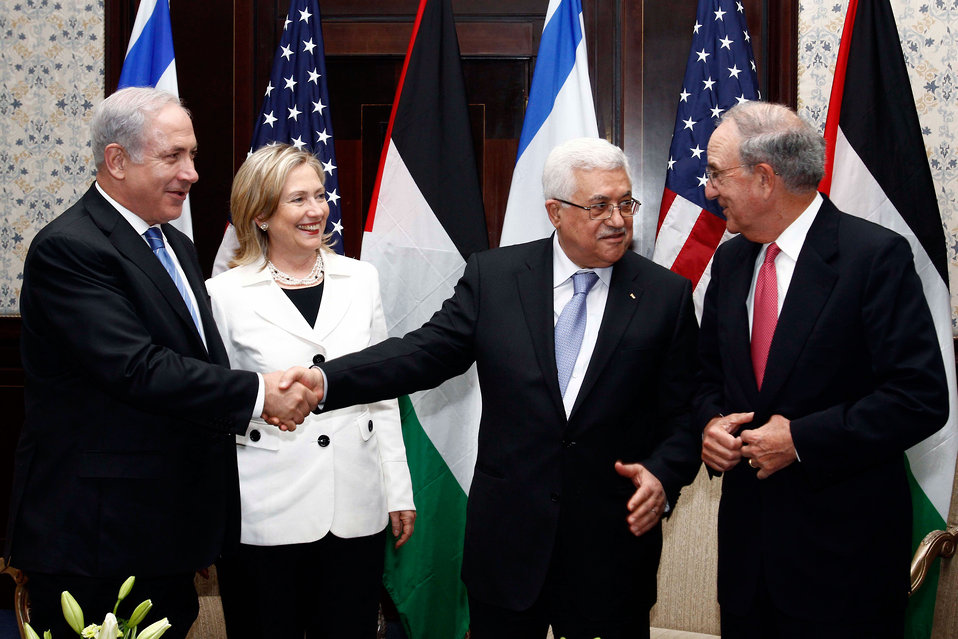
Israeli Prime Minister Netanyahu, Secretary Clinton, Palestinian President Abbas, and Special Envoy Mitchell Chat After Meeting

Israeli Prime Minister Benjamin Netanyahu, first from left; U.S. Secretary of State Hillary Rodham Clinton, second from left; Palestinian President Mahmoud Abbas, third from left; and U.S. Special Envoy for Middle East Peace George J. Mitchell, fourth from left; chat after their meeting in Sharm El-Sheikh, Egypt, on September 14, 2010.